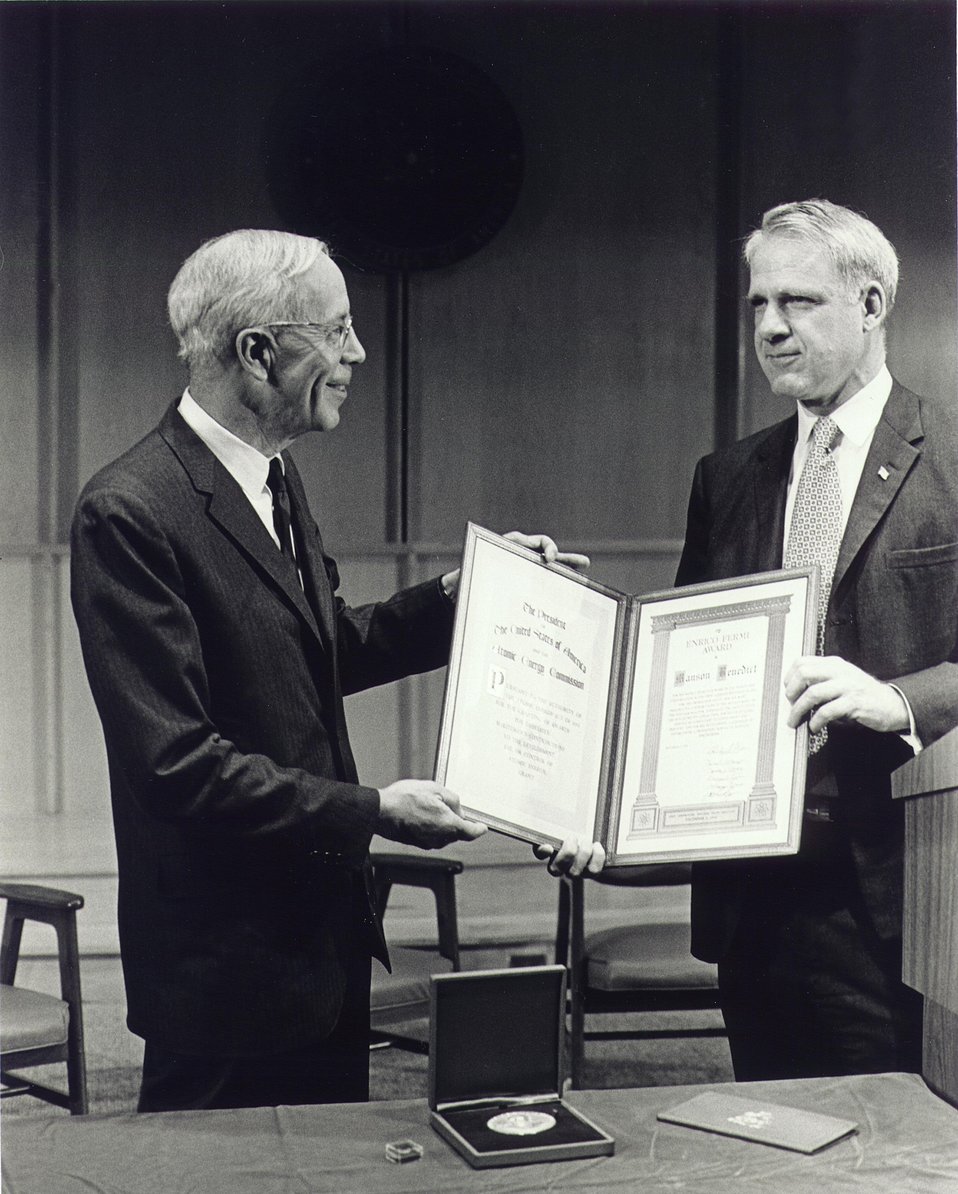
Fermi Award presented by James Schlesinger.